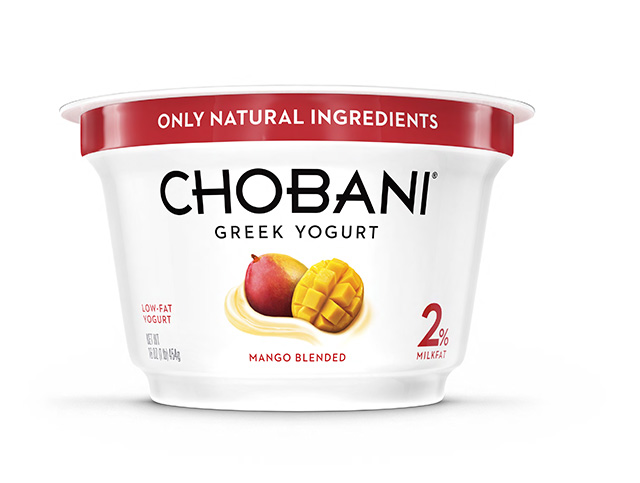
RECALLED – Greek yogurt products

September 6, 2013 – Product Recall – Chobani, Inc. Voluntarily Recalls Greek Yogurt Because of Product Concerns.